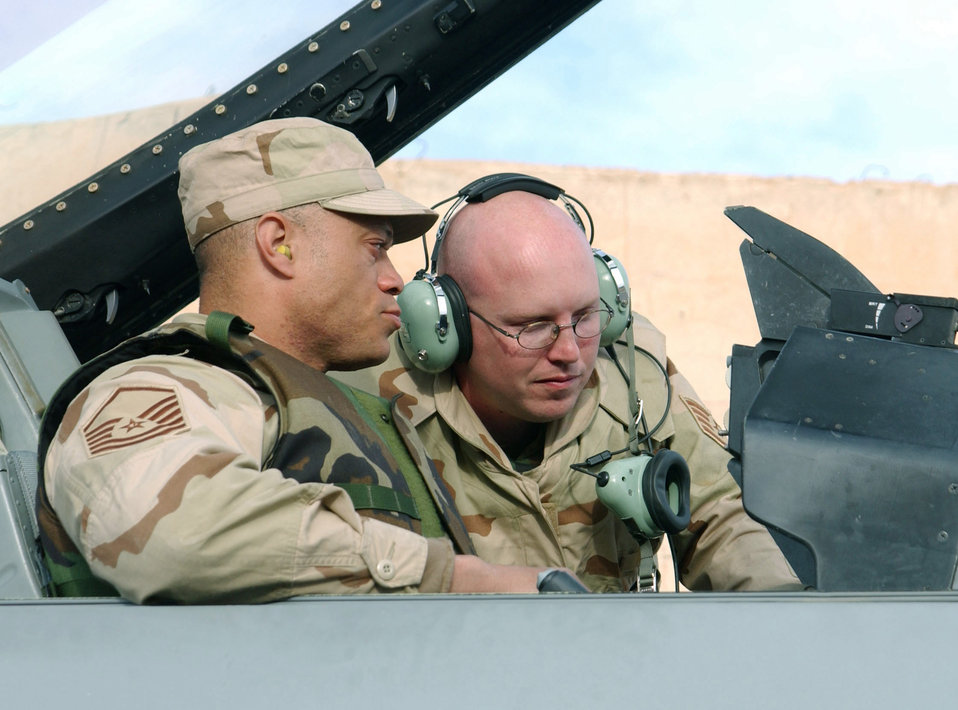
Testing avionics

OPERATION IRAQI FREEDOM -- Maintainers with the 410th Air Expeditionary Wing tests avionics equipment on an F-16 Falcon to prepare it for take off March 23. The 410th flies missions from a forward-deployed location to support Operation Iraqi Freedom.